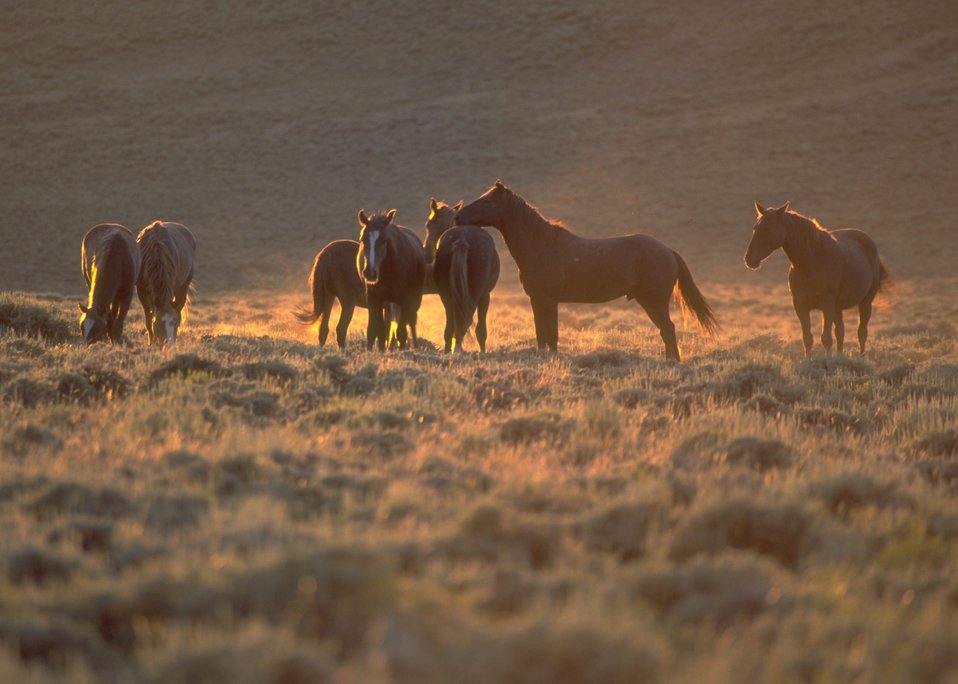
Wild horses, Rock Springs Field Office.